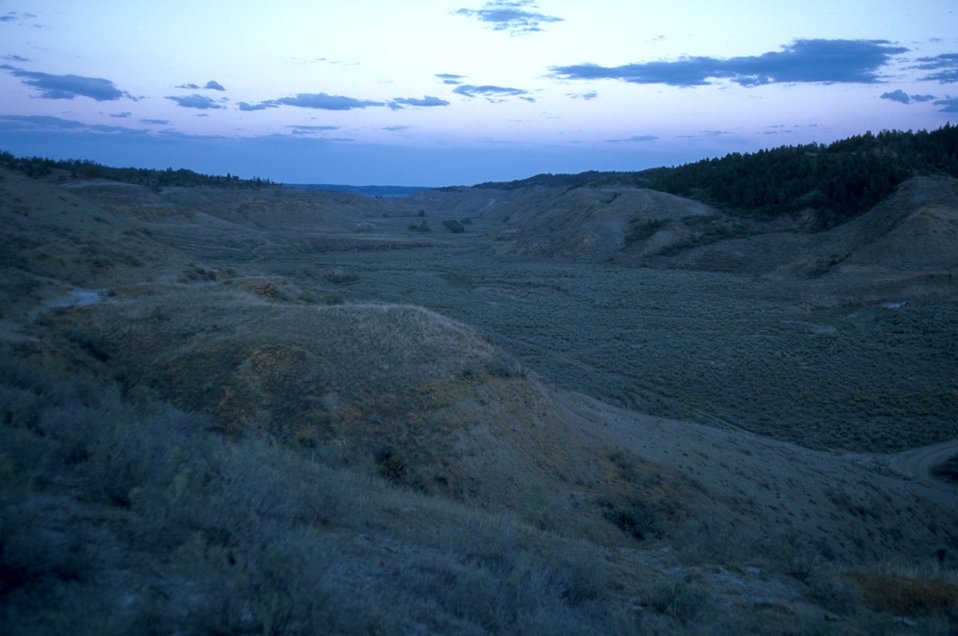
Missouri Breaks Scenery